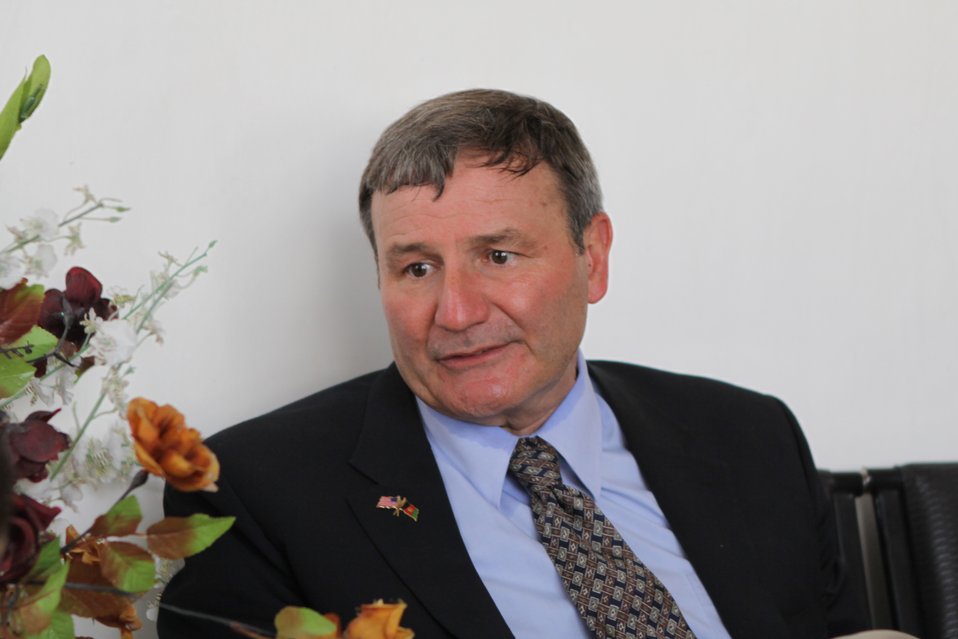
100525 Hirat Marble Conference 865